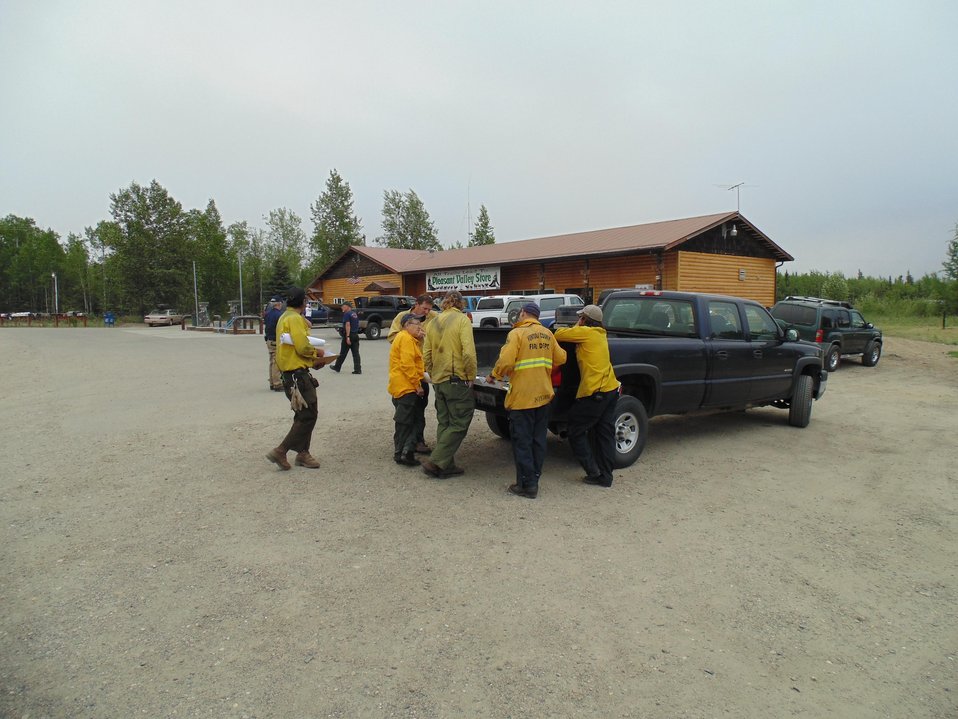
Stewart Fire crew holds a structure protection-planning meeting near the Pleasant Valley general store in North Pole, AK. The Stewart Creek Fire located 25 miles east of North Pole, AK began on Jun. 19, 2013 due to human causes and has consumed an estimated 85, 475 acres. The fire is approximately 57% contained.